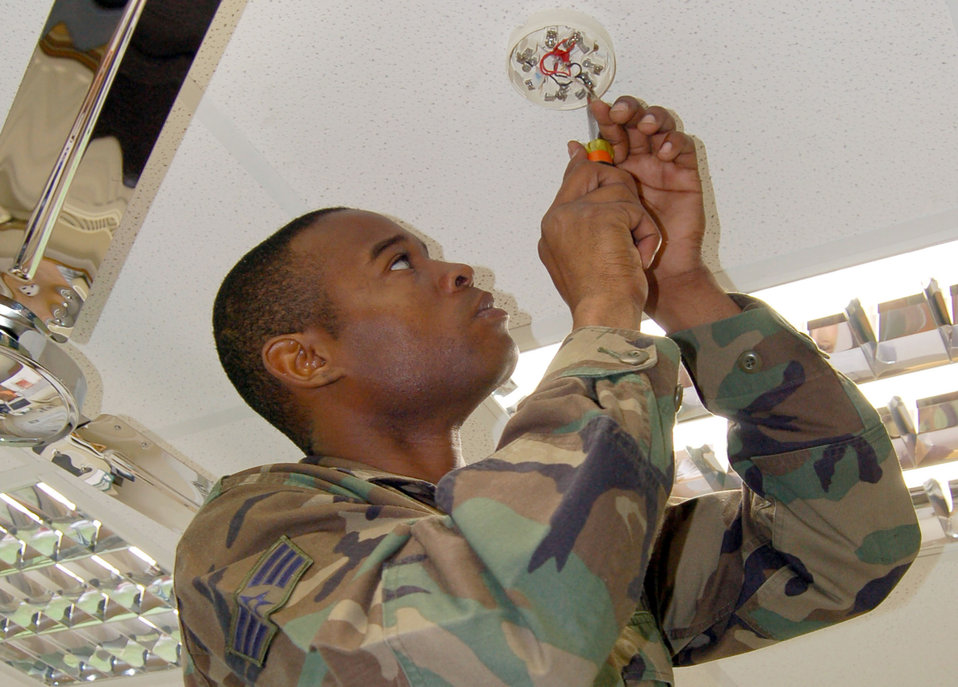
Air Force birthday just another day on the job

Senior Airman Delbert Coburn Jr. installs a fire alarm heat detector at Spangdahlem Air Base, Germany, Sept. 18. He is an electrical systems journeyman with the 52nd Civil Engineer Squadron.